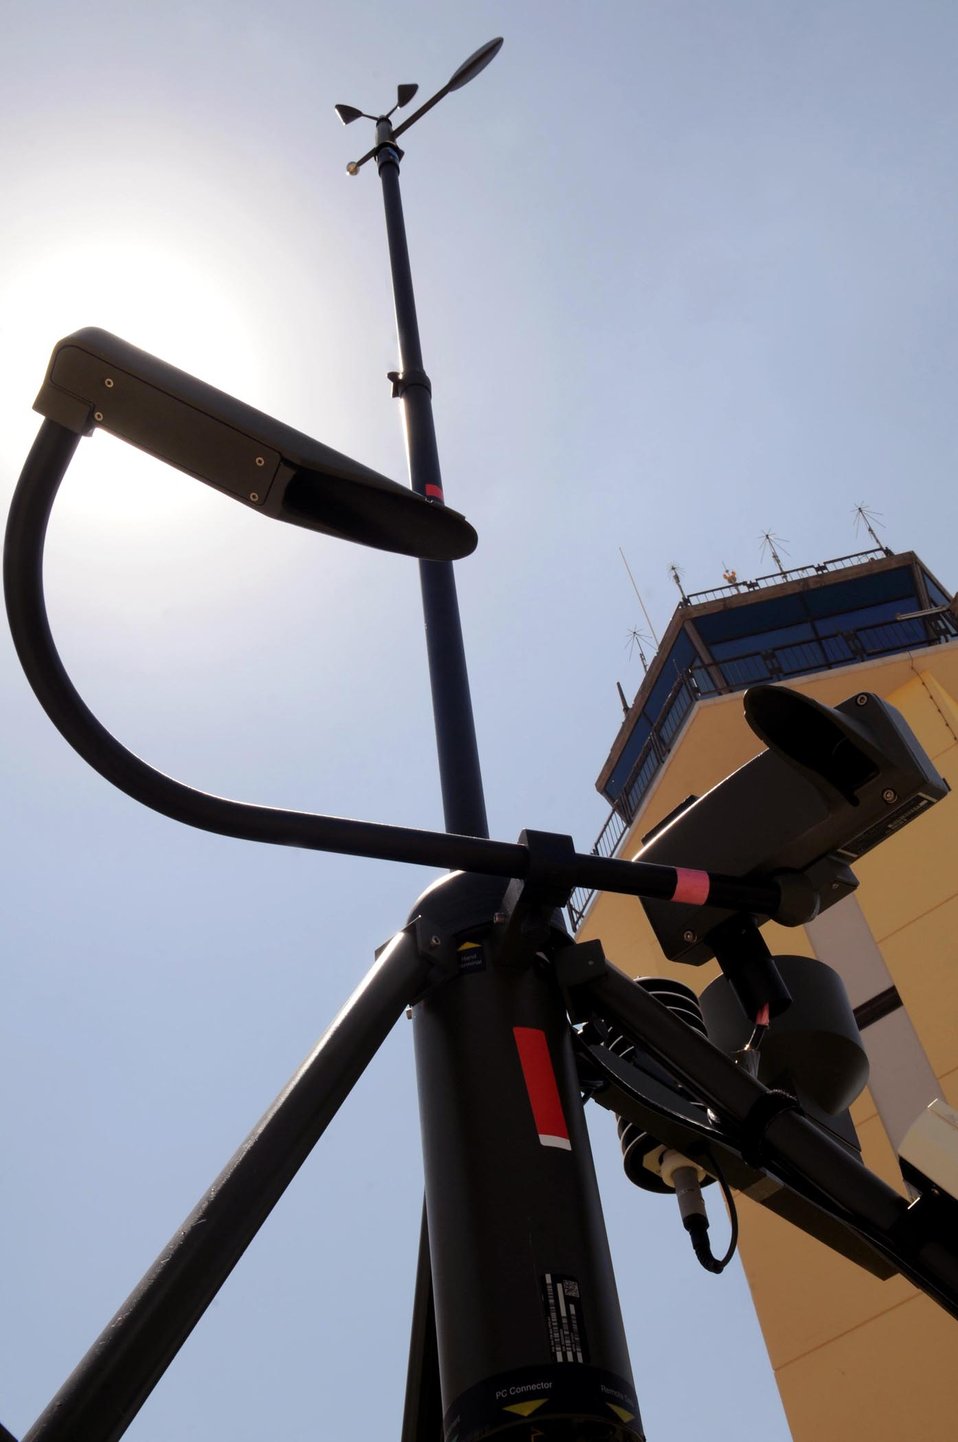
Incirlik weather techs train to support contingency operations

A Tactical Meteorological Observing System collects weather data in front of the 39th Operations Squadron air traffic control tower Aug. 25, 2010, at Incirlik Air Base, Turkey.